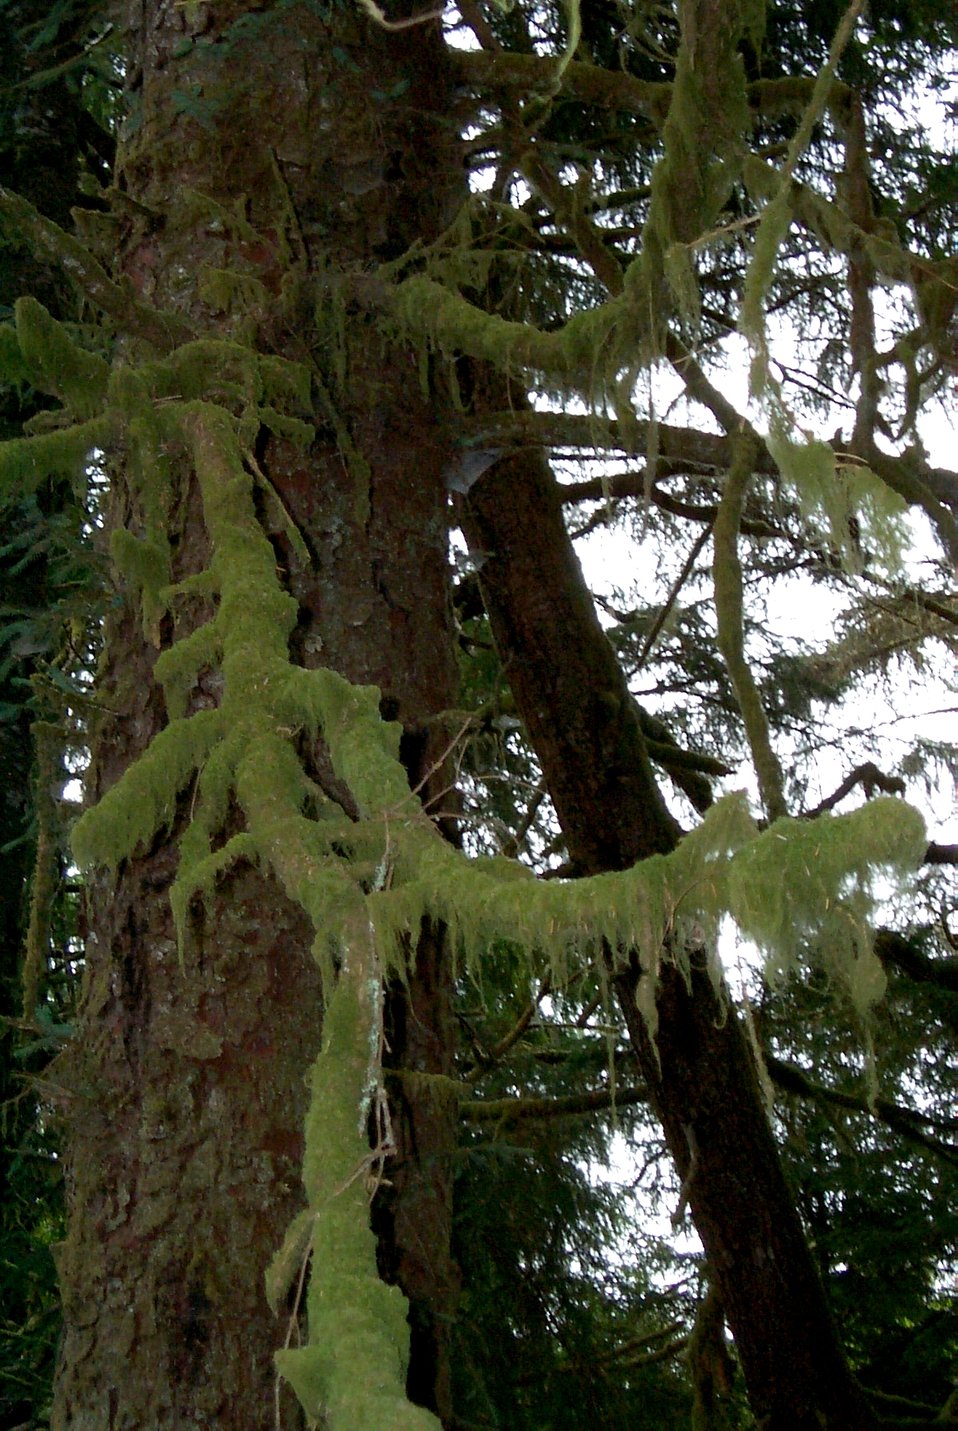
Moss on fir tree at Fort Clatsop National Memorial.